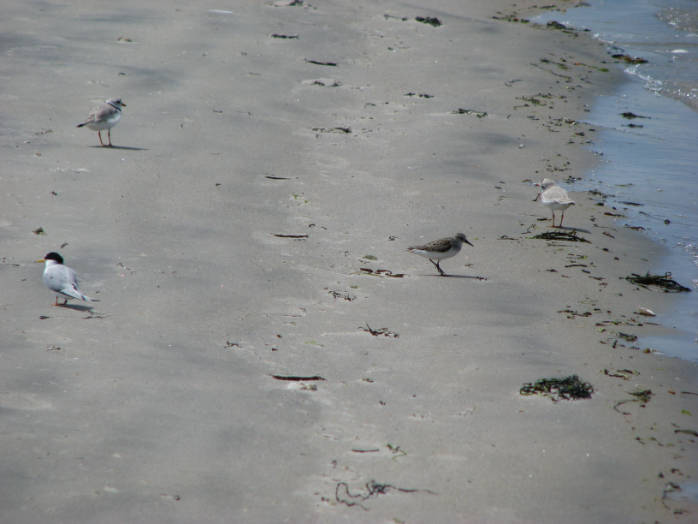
Piping Plovers and Sanderlings

Sandy Point, RI.